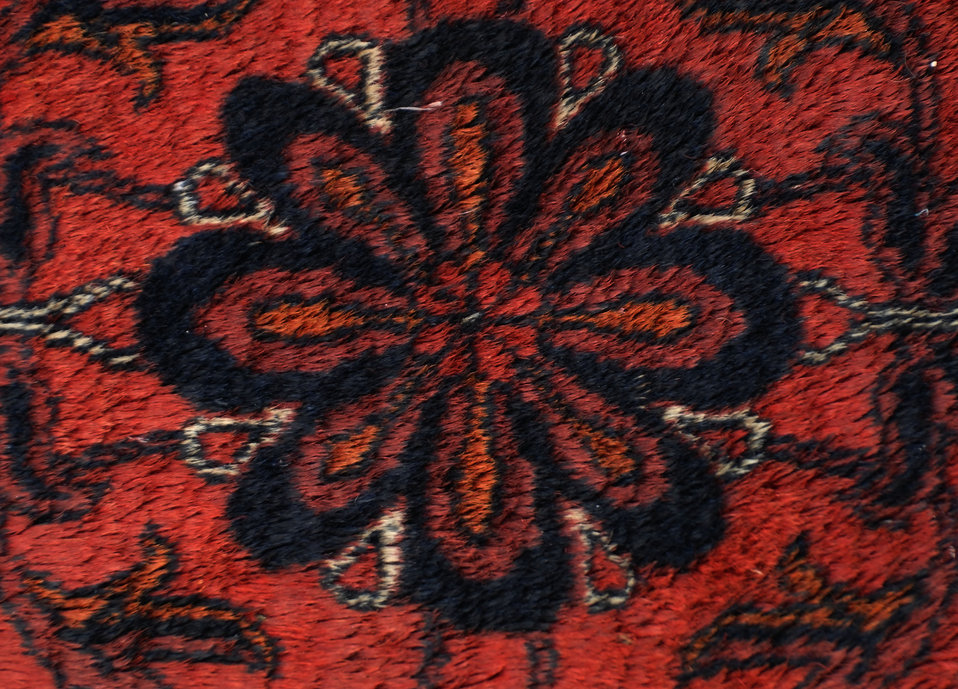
'On the Road' in Nangarhar Province